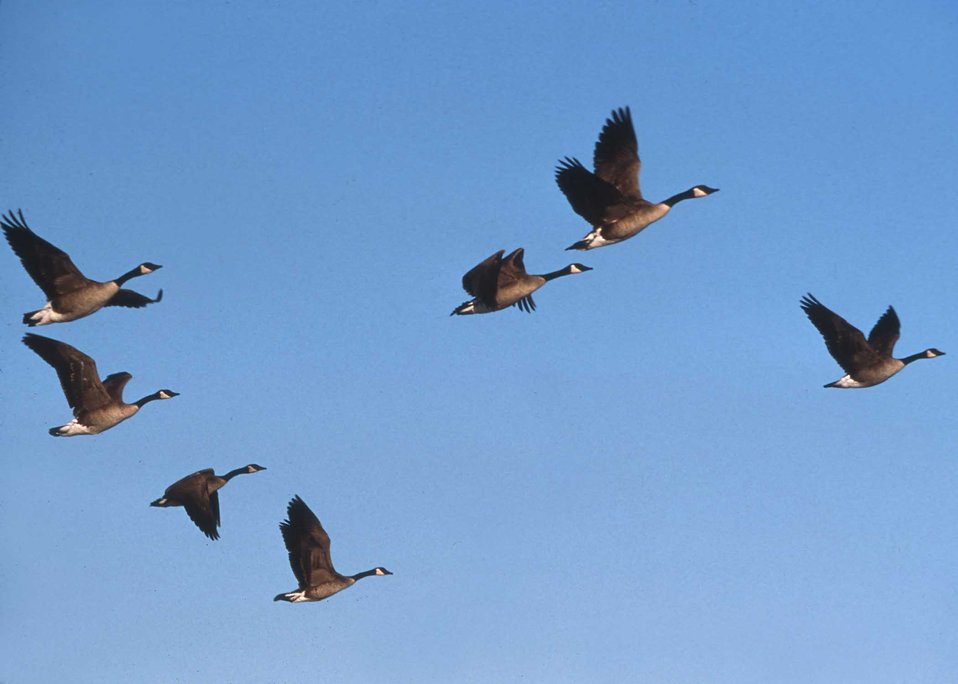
Canada geese.